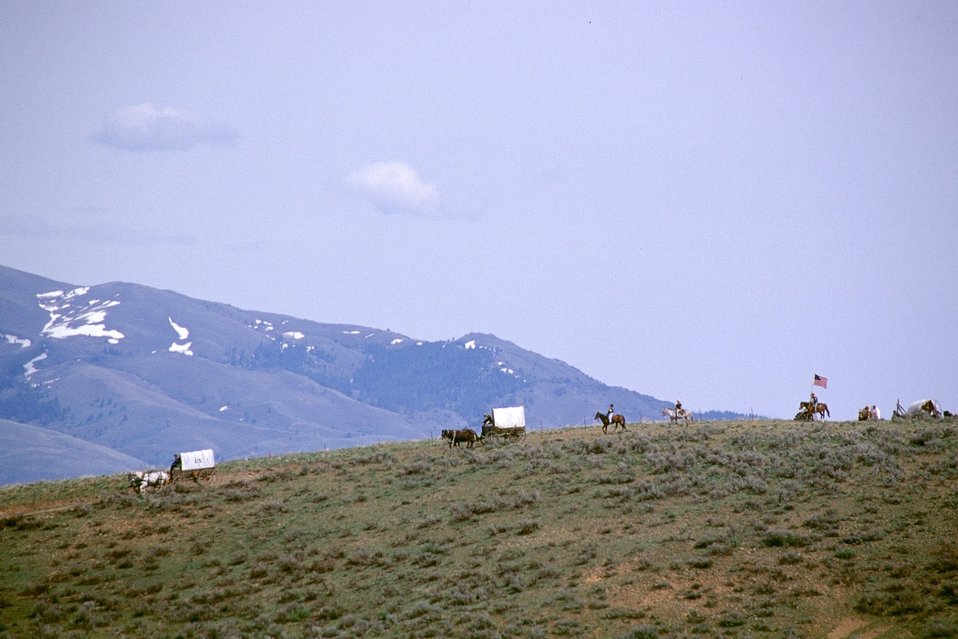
Wagon train reenactment. Wagon train at the base of Lookout Mountain. NHOTIC 10th Anniversary